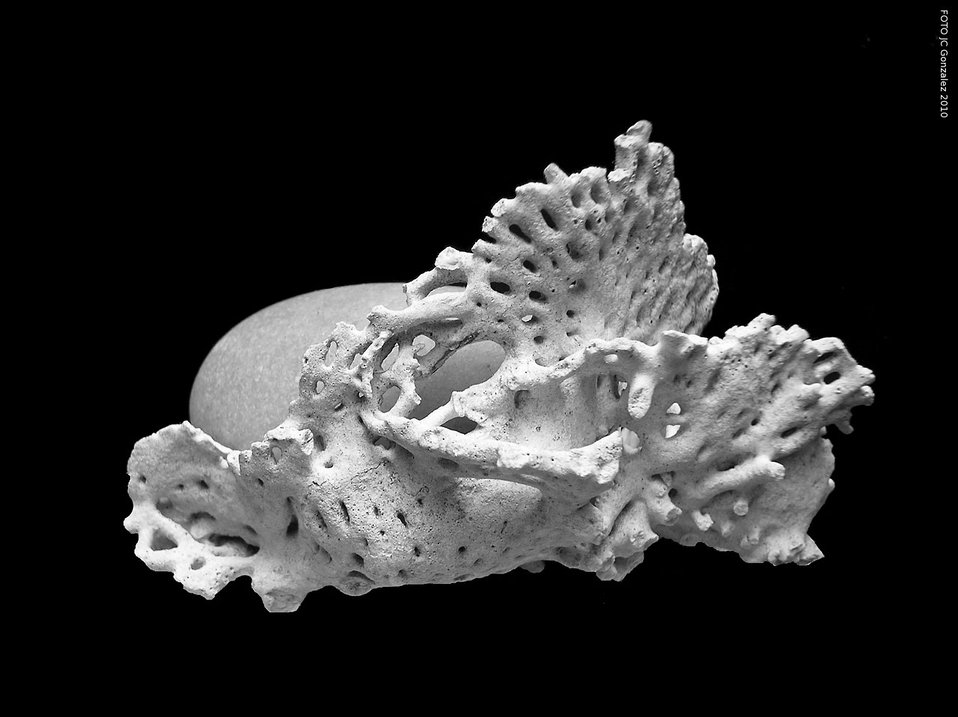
Coral stone.